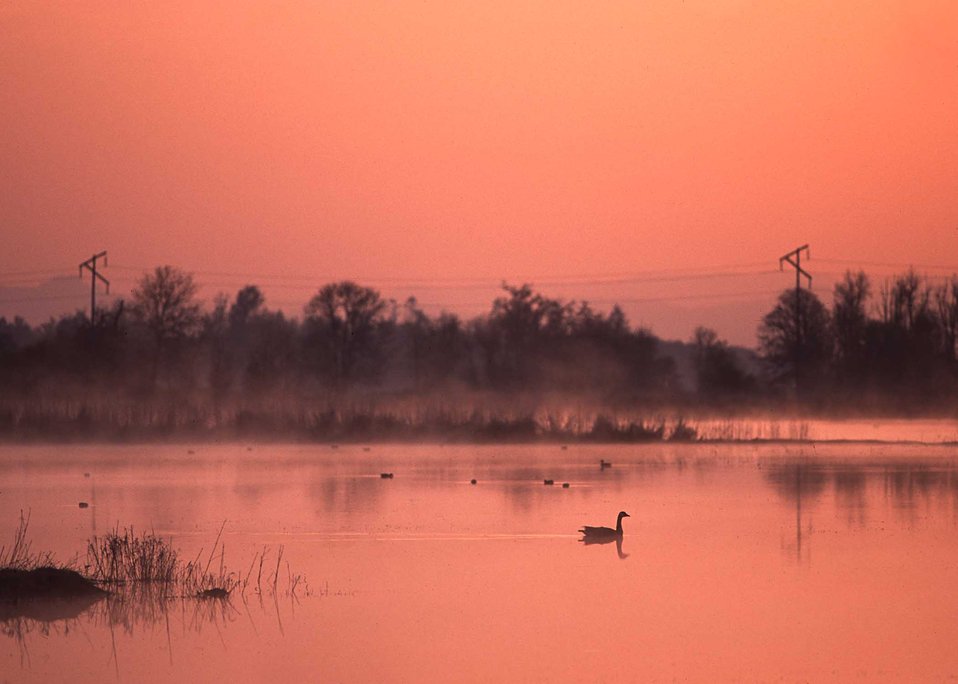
Sunrise in Benton County, Oregon.